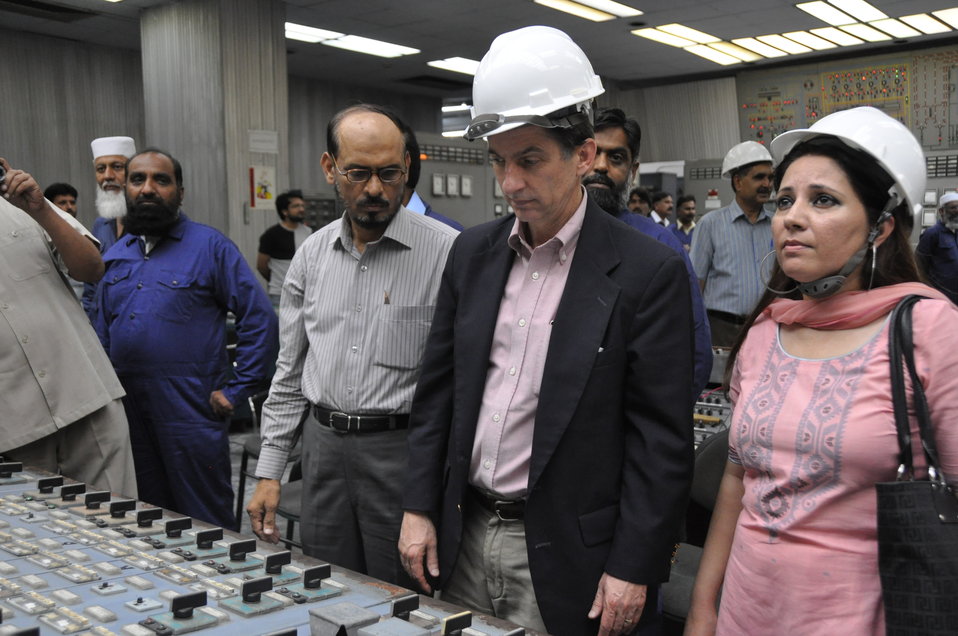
Muzaffargarh Thermal Power Station